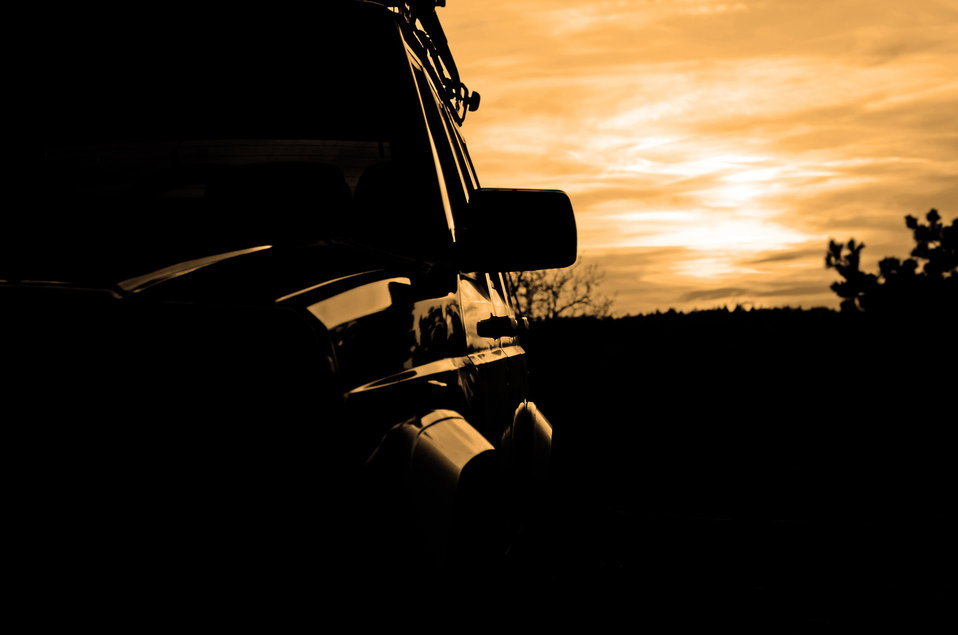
Car in the shade.